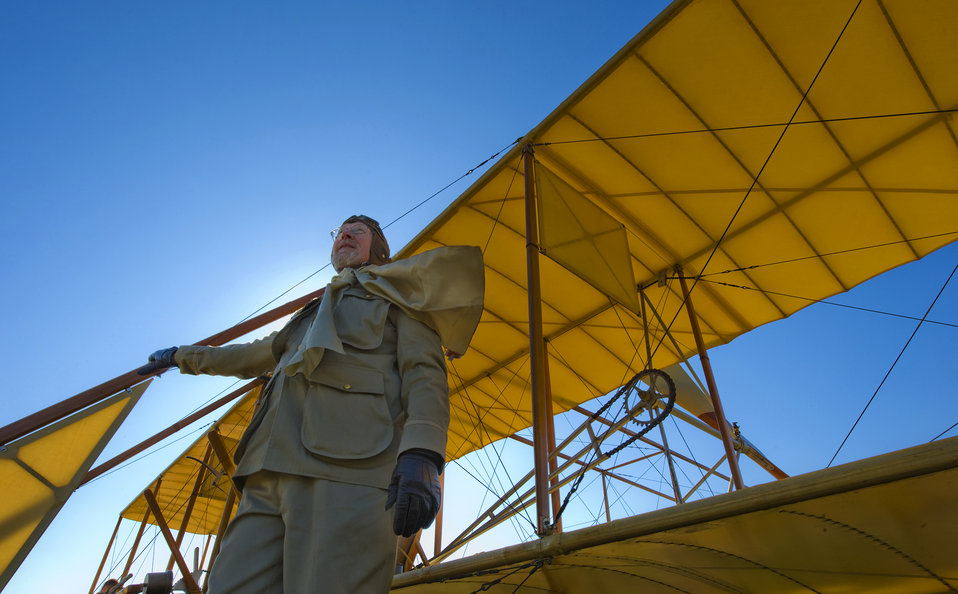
Military, civilians celebrate 100 years of military flight

Don Gum, pilot of this Wright